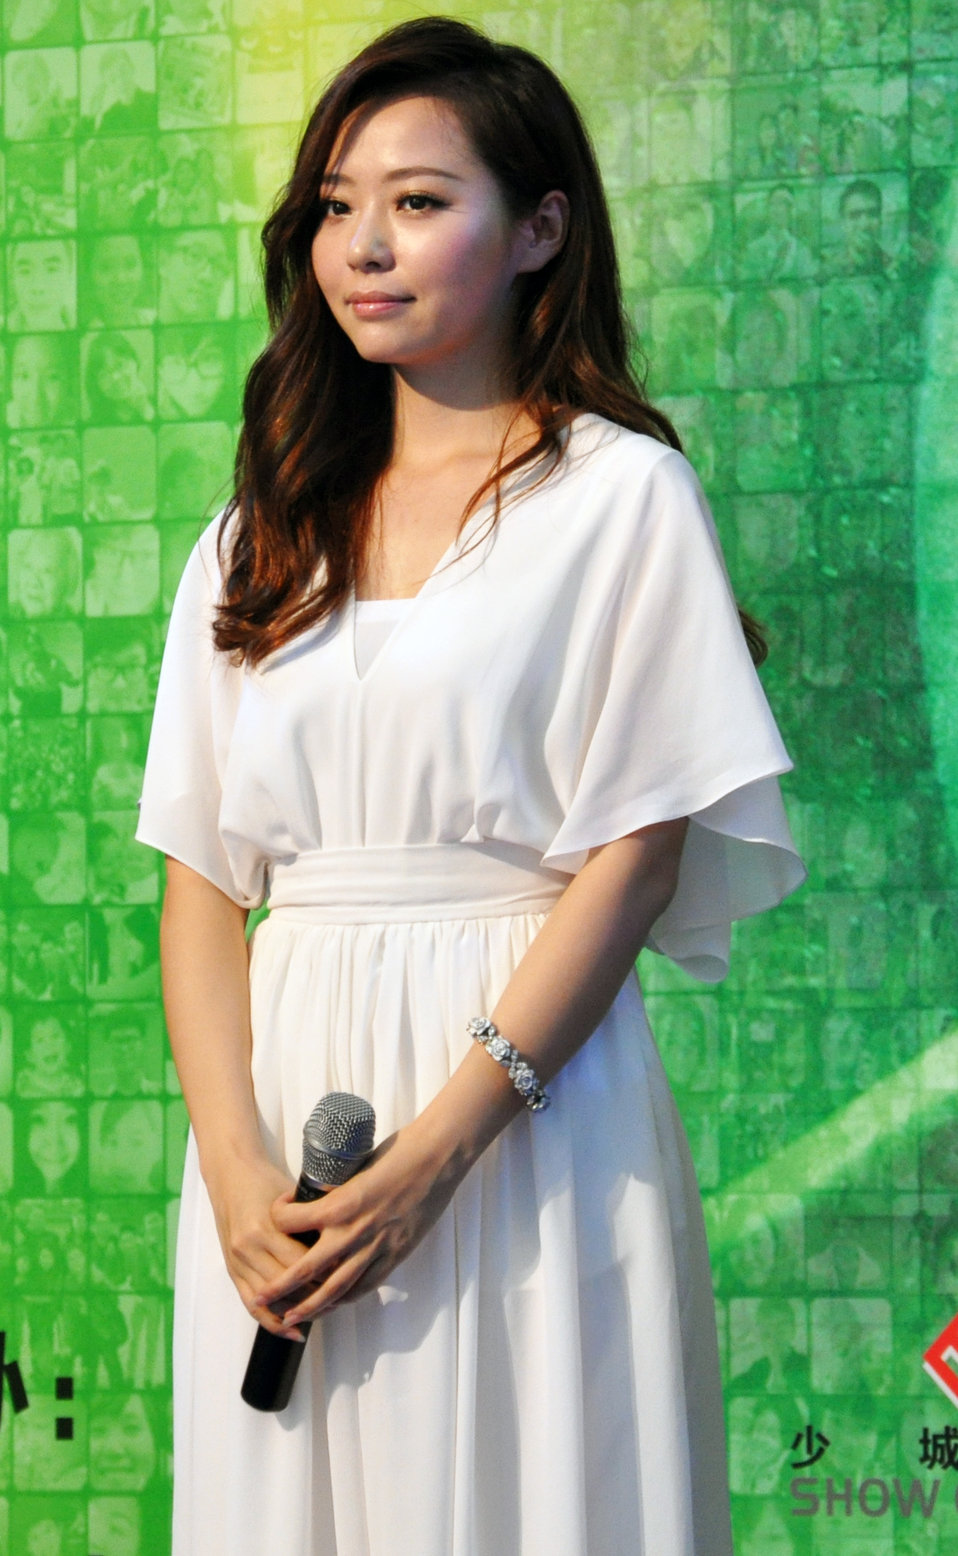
A photo of Jane Zhang taken by Sherriff 中文: 歌手张靓颖的照片，Sherriff拍摄